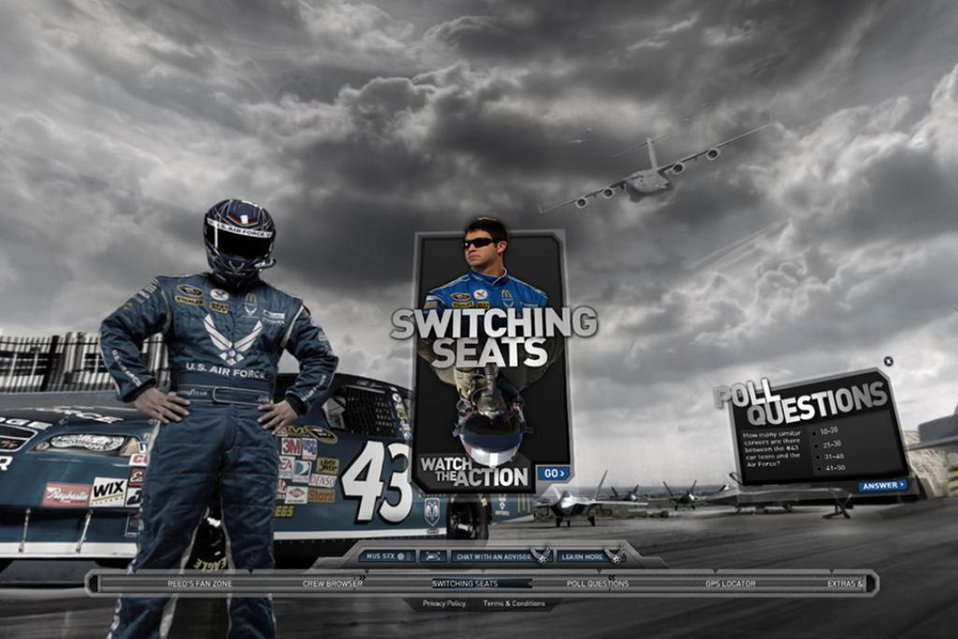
Switching Seats campaign going strong

Air Force officials along with contract advertising agency GSD&M Idea City launched the multimedia marketing campaign